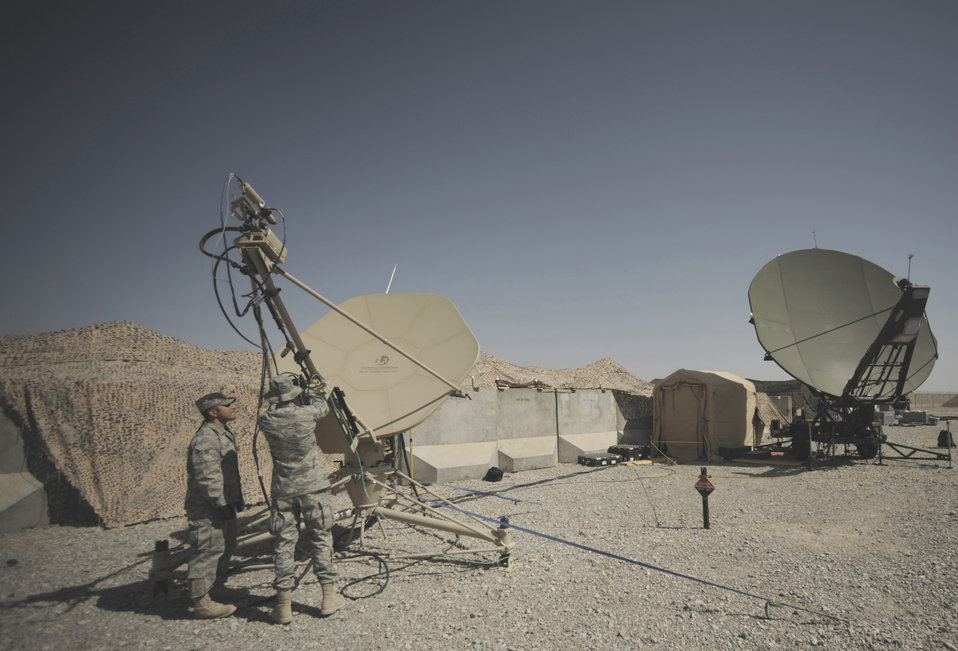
Operation Enduring Freedom

Senior Airman Sergio Saenz and Airman 1st Class Frank Fauland perform routine maintenance May 17 on a satellite dish at Kandahar Airfield, Afghanistan. Combat communications Airmen are responsible setting up and maintaining base telephone and internet communications. The Airmen are RF transmissions engineers and satellite communications technicians with the 451st Combat Communications Squadron at Kandahar.